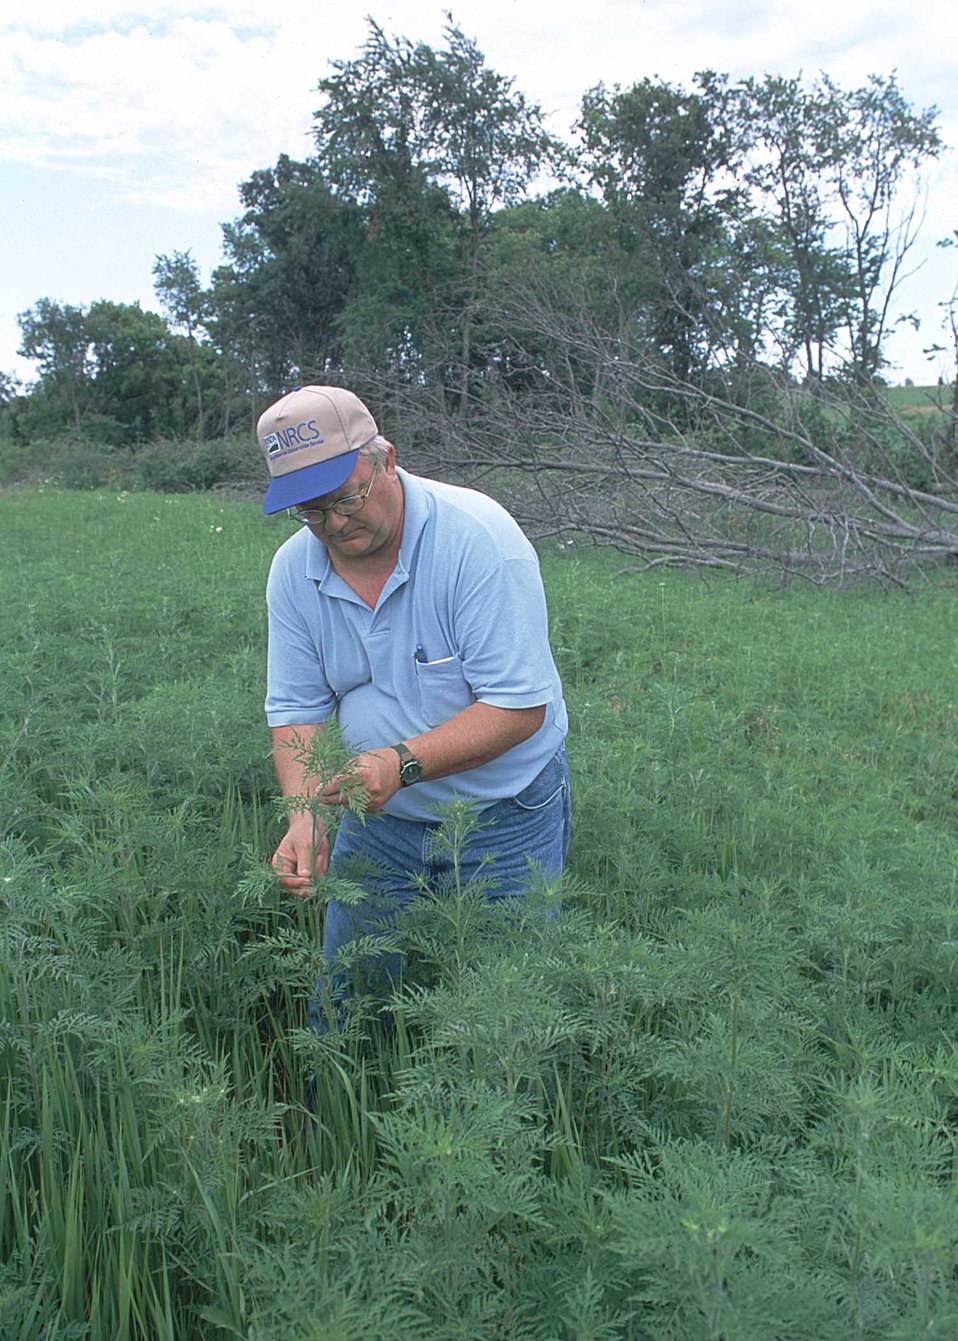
Common ragweed is a favored habitat for quail. The felled "edge feathered" trees in background along a draw offer transition cover into the field.